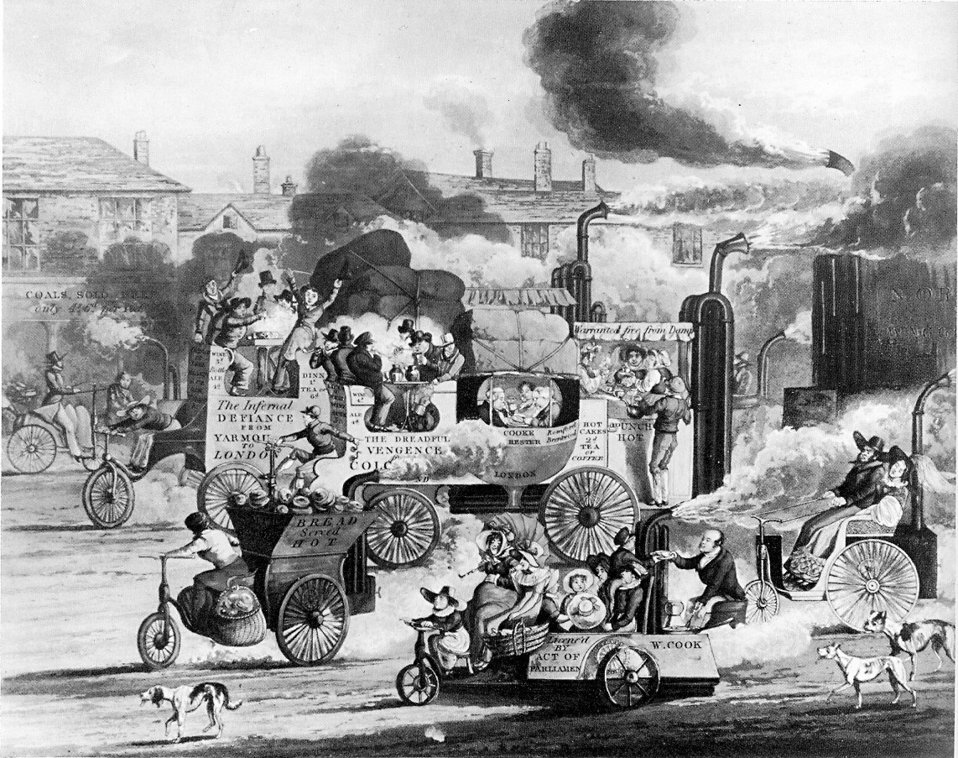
1831-View-Whitechapel-Road-steam-carriage-caricature